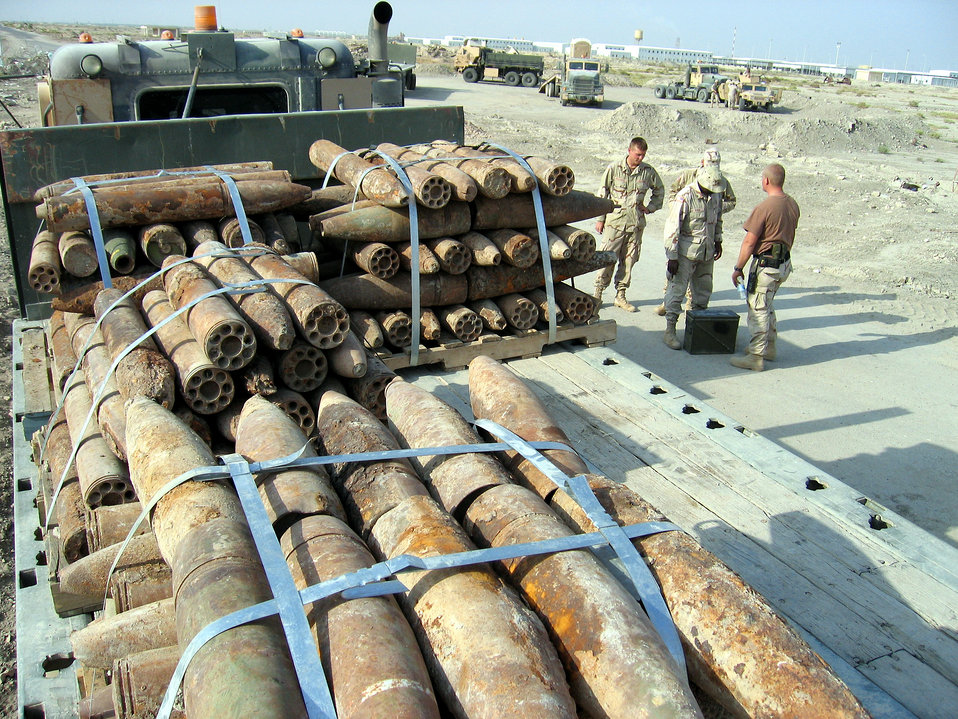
Big bang

IRAQ (AFPN) -- Volunteers move ordnance to Ali Base, Iraq, for disposal. Much of the ordnance was in poor condition and required careful ordnance identification and sorting before being palletized for transportation.